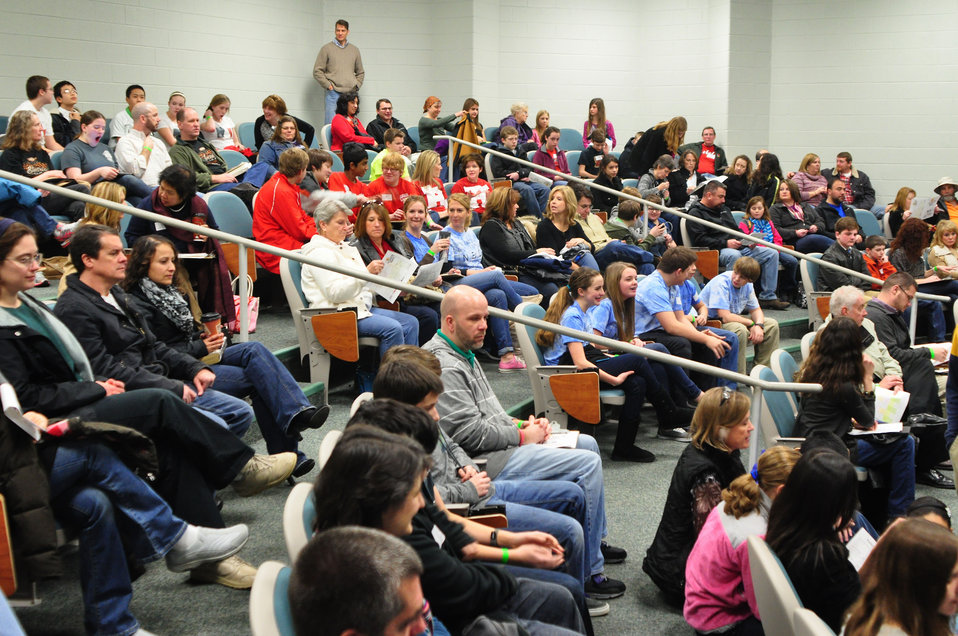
DOE Middle School Science Bowl

14-017 DOE photo Lynn Freeny 2-1-2014 Oak Ridge Tennessee